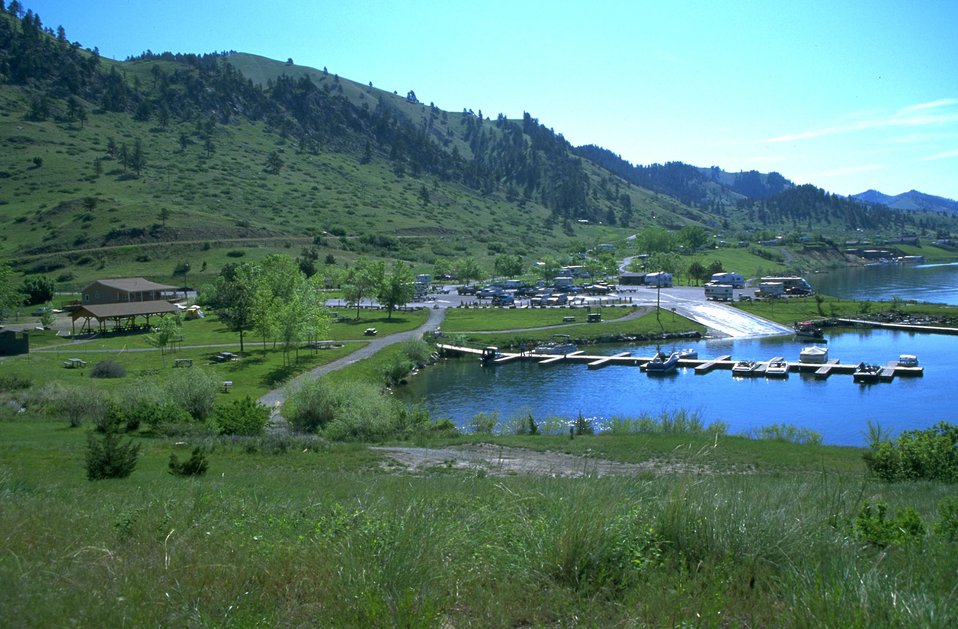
Campground and Marina at Holter Lake